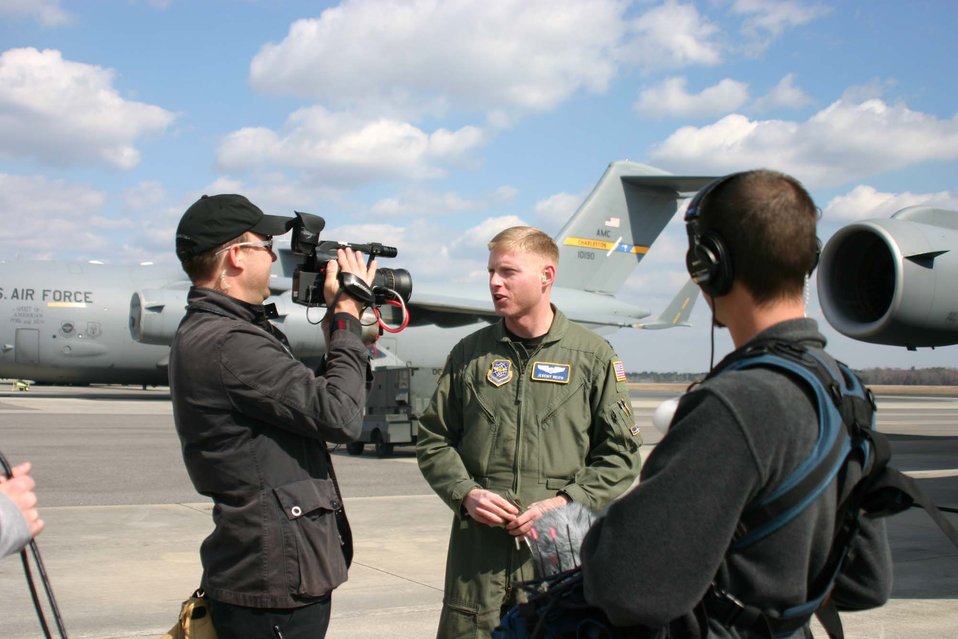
Lights, camera, action

CHARLESTON AIR FORCE BASE, S.C. (AFPN) -- Capt. Jeremy Reich talks with camera crews from the Air Force's ad agency here during filming Feb. 13. Captain Reich is an aircraft commander with the 14th Airlift Squadron.